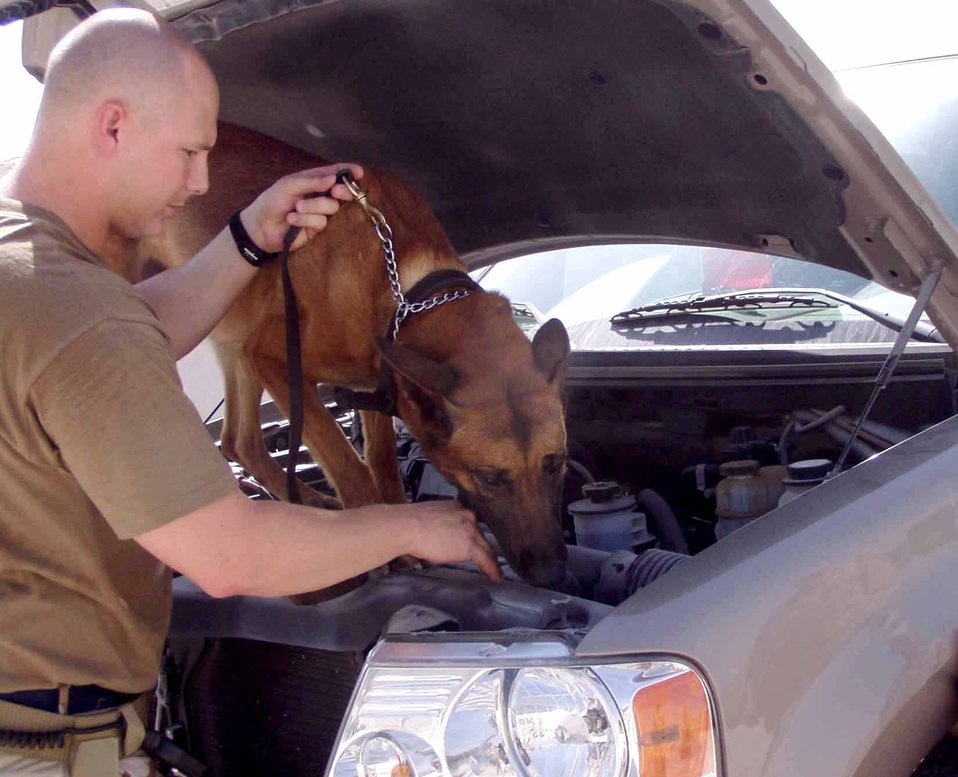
Four-legged sentinels key to force protection

SOUTHWEST ASIA -- Military working dog handler Staff Sgt. Edward Canell watches on as his partner, Rico, sniffs an engine block for explosives. Both are deployed from Buckley Air Force Base, Colo.